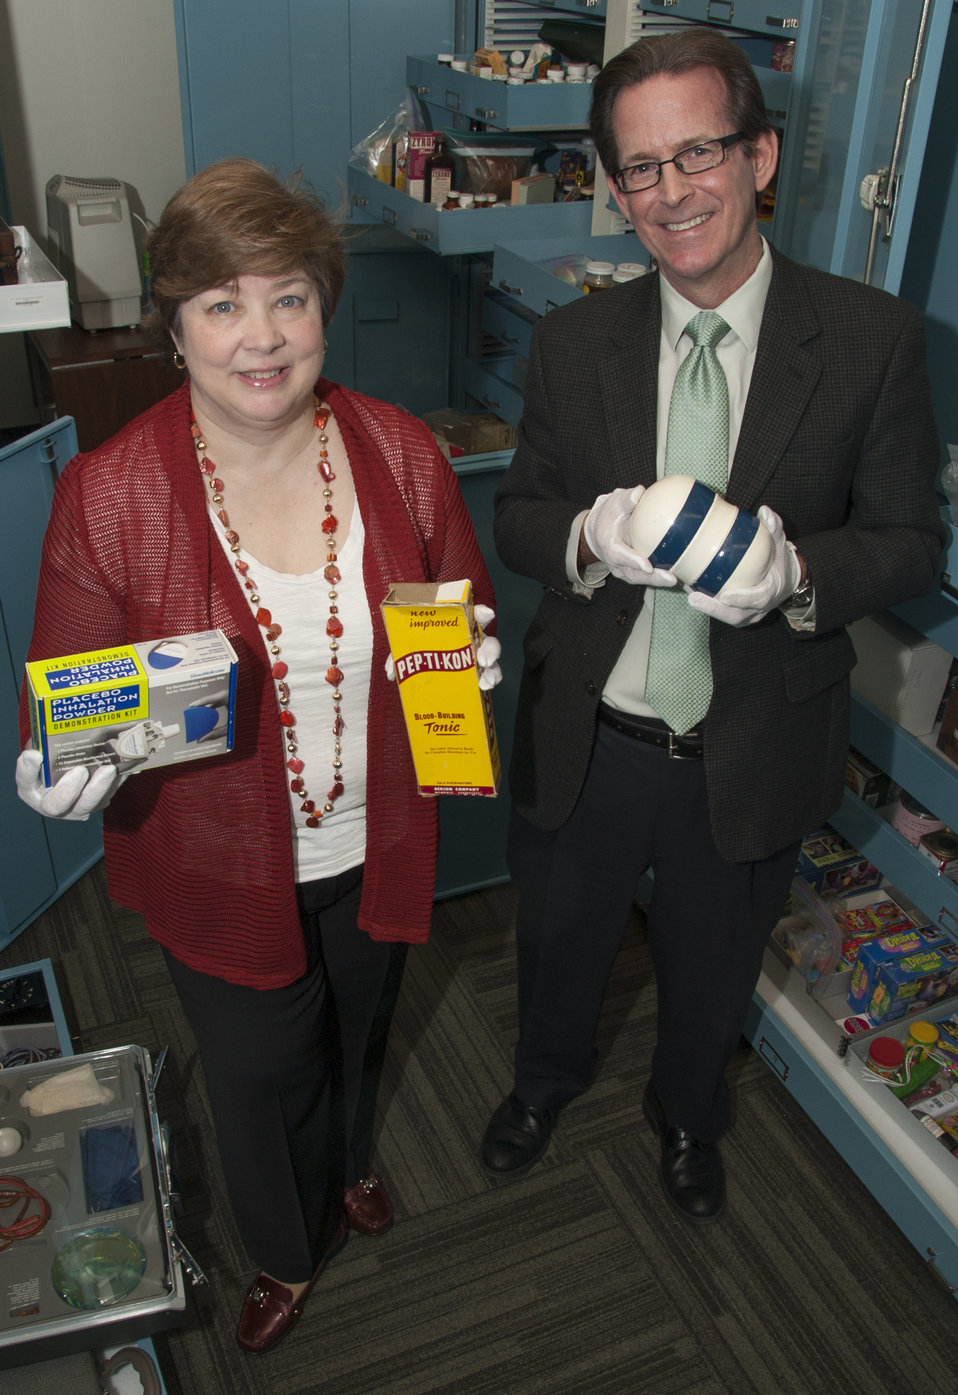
FDA Historians

Historians Dr. Suzanne Junod and Dr. John P. Swann care for thousands of artifacts at FDA, including (left to right) “Placebo Inhalation Powder,” an inert treatment that admitted to being therapeutically worthless in its name; “Pep-Ti-Kon,” a health tonic containing lots of alcohol; and a model of a “Zerret Applicator,” a 1940s-era device that (falsely) promised to relieve suffering from any known disease. For more information read this FDA Consumer Update:

FDA Historians Share Lessons From Agency's Past

This photo is free of all copyright restrictions and available for use and redistribution without permission. Credit to the U.S. Food and Drug Administration is appreciated but not required.